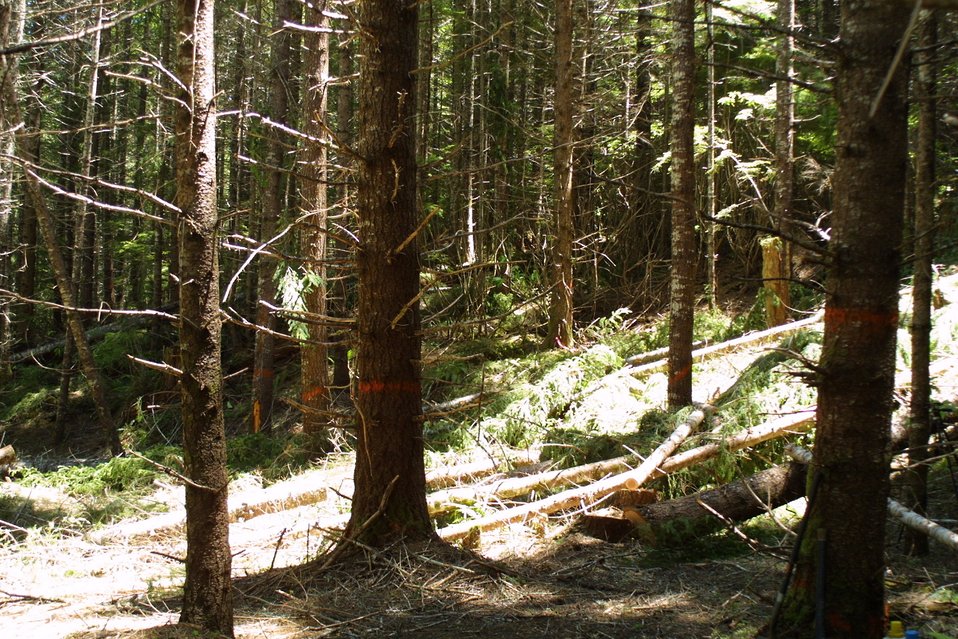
Camas East Timber Sale in Late Successional Reserve.